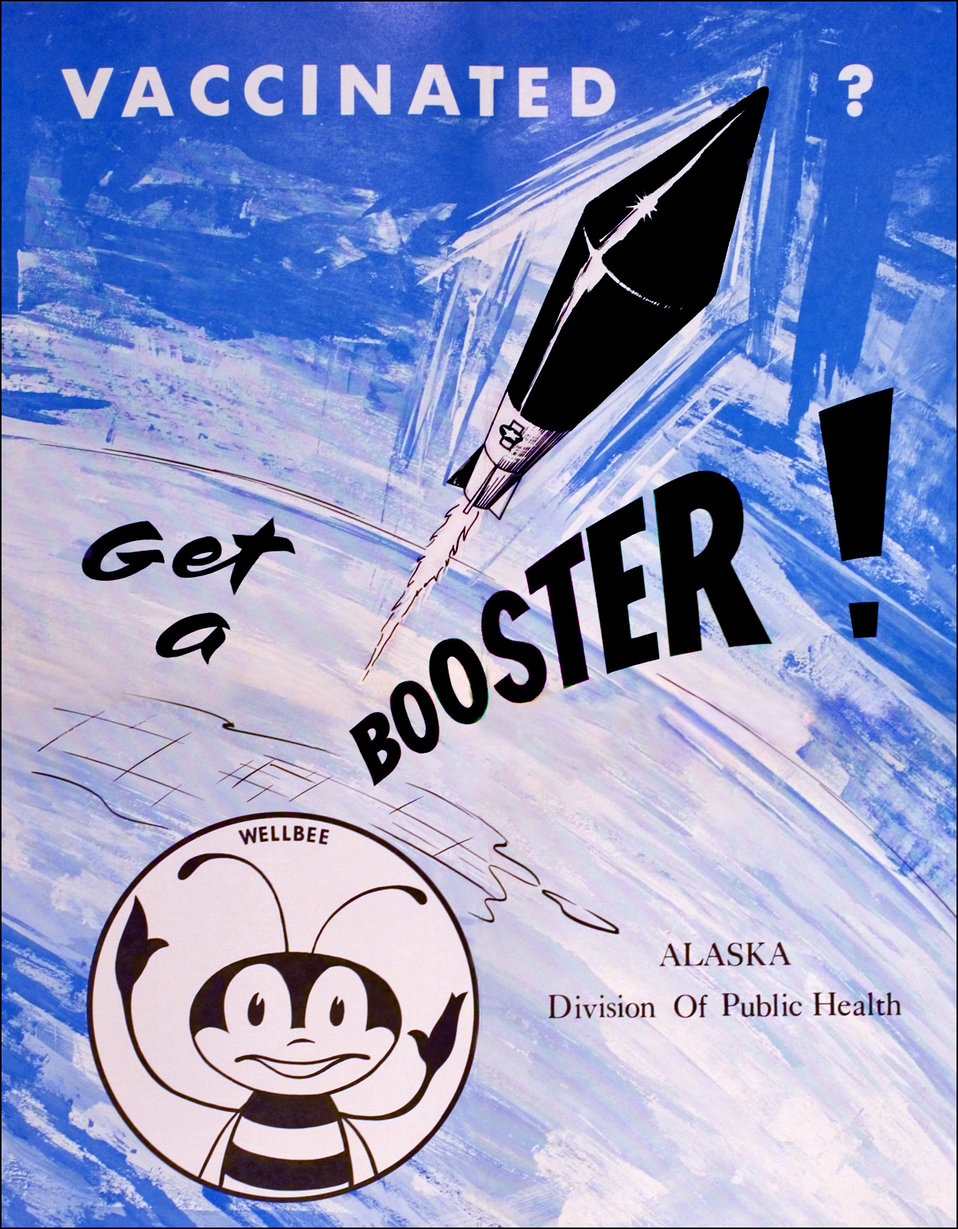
This 1964 poster featured what at that time, was CDC's national symbol of public health, the 'Wellbee', who here was reminding the public to get a booster vaccination.